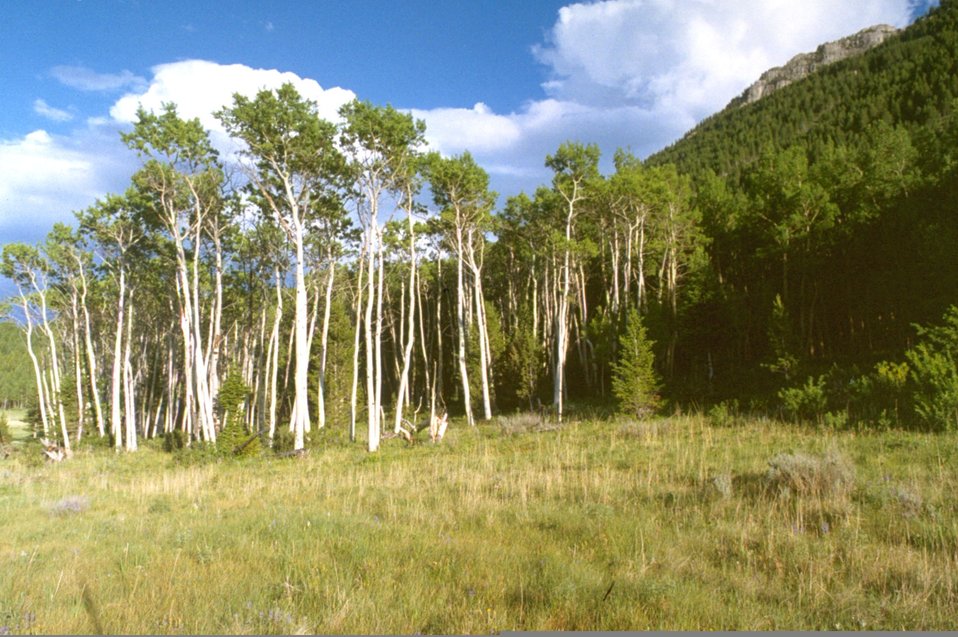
Aspen Grove